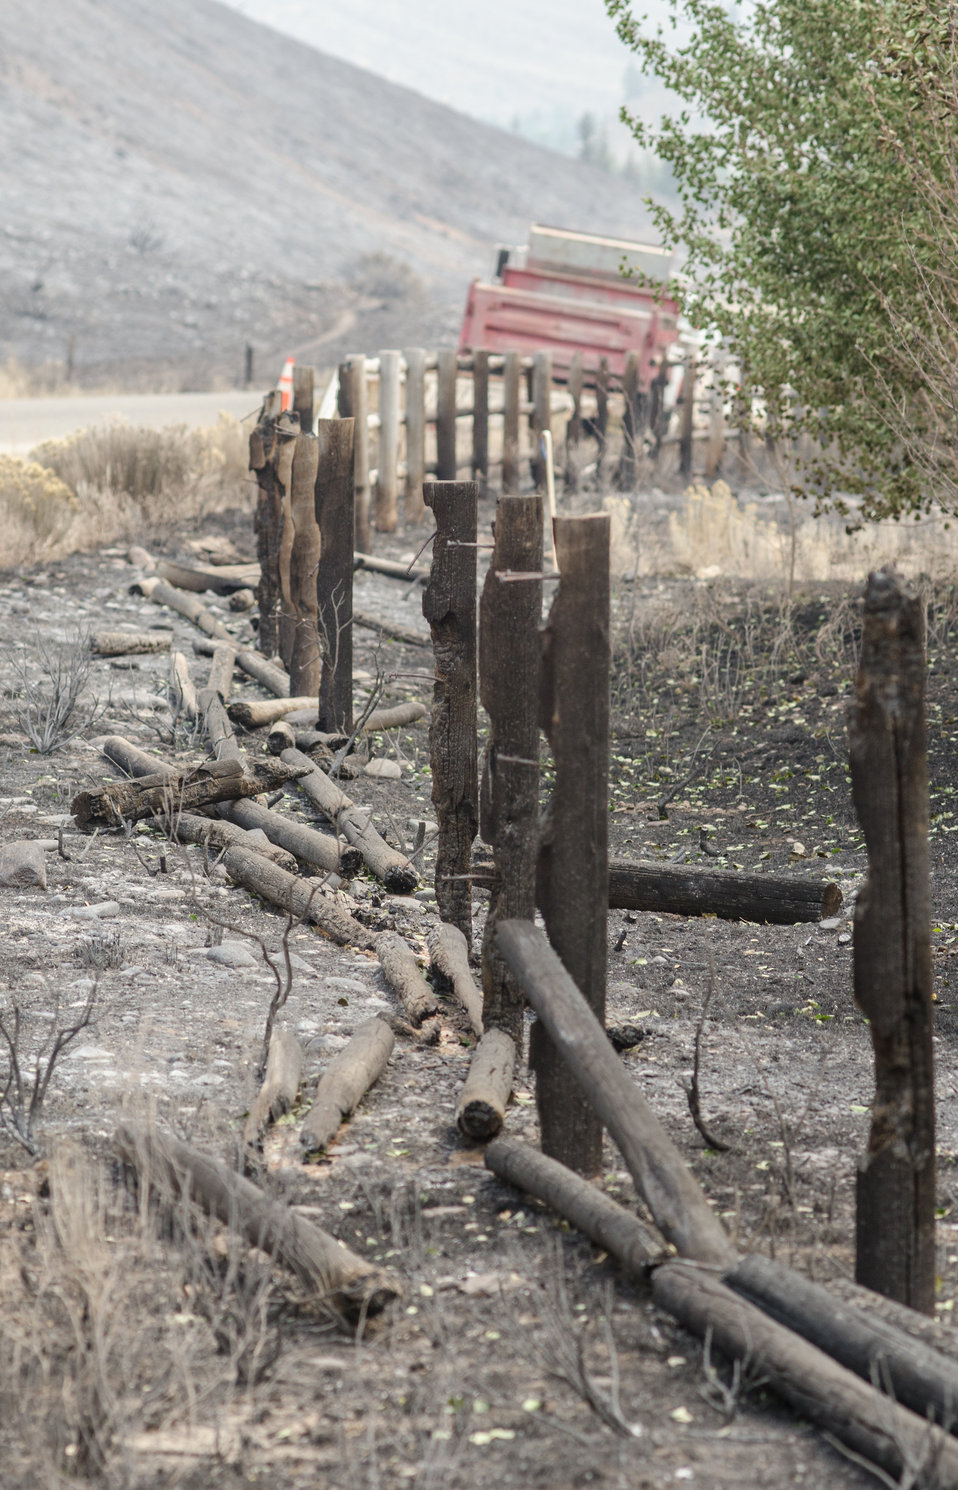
Thanks to the efforts of Wildland Firefighters, support crews and other first responders, homes and residential communities were (with few exception) saved from major damage, from the Beaver Creek Fire, near Hailey, ID, in the interface of U.S. Department of Agriculture (USDA) Forest Service (FS) and Sawtooth National Forest and Bureau of Land Management (BLM) lands, on Wednesday, Aug 21, 2013. In this community, major sections of hillside were charred, some suffered burnt trees, grass lands and fences.